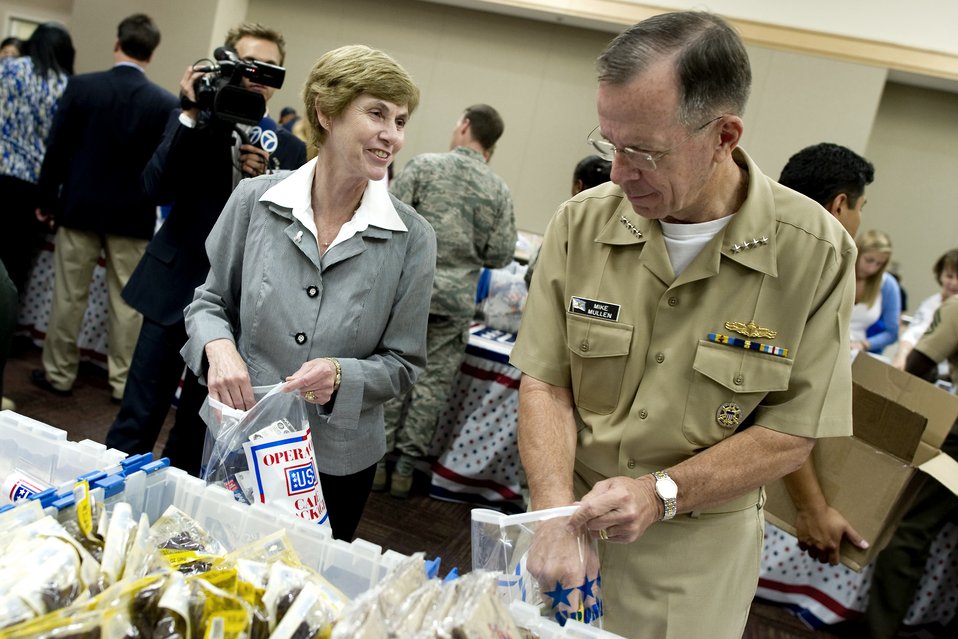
Admiral and Mrs. Mullen advocate more reserve support

Adm. Mike Mullen, chairman of the Joint Chiefs of Staff, and his wife Deborah participate in the USO care package packing party at the Pentagon, July 2, 2010. The packages contain items such as international calling cards, toiletries and entertainment items that provide a touch of home to servicemembers. In the most recent podcast to troops, Admiral and Mrs. Mullen discussed stresses on military families and efforts to alleviate them.